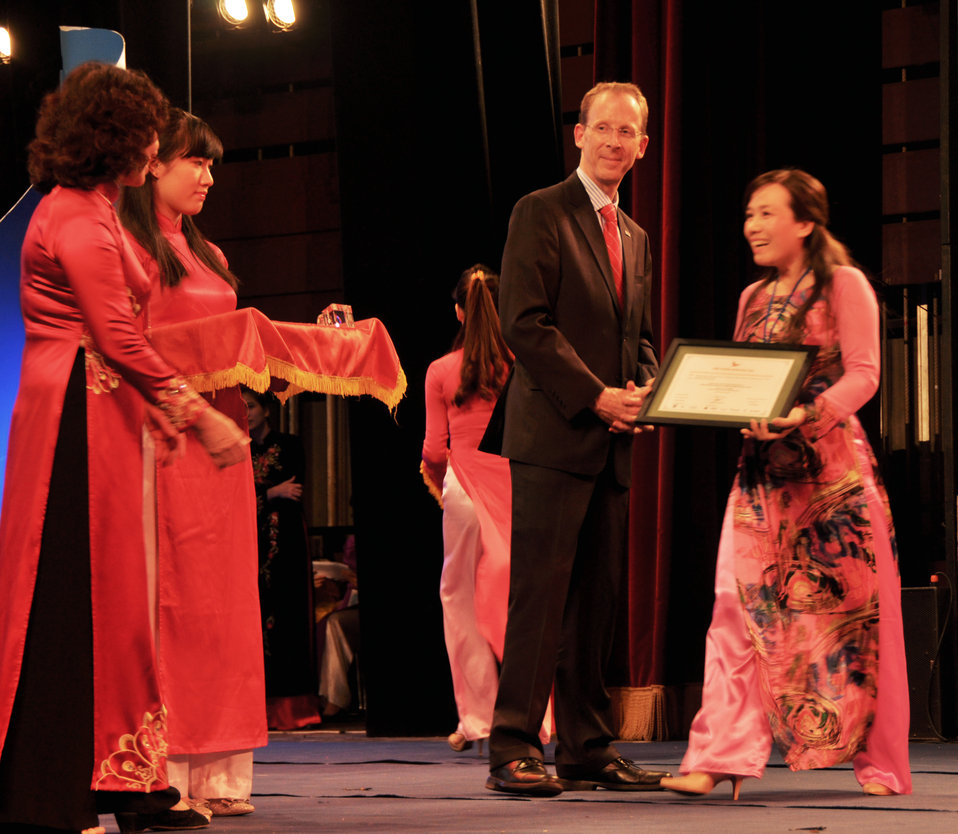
Vietnam Women Innovation Day 2013

USAID Mission Director Joakim Parker awards prizes to winning innovative proposals.

Hanoi, October 2, 2013.